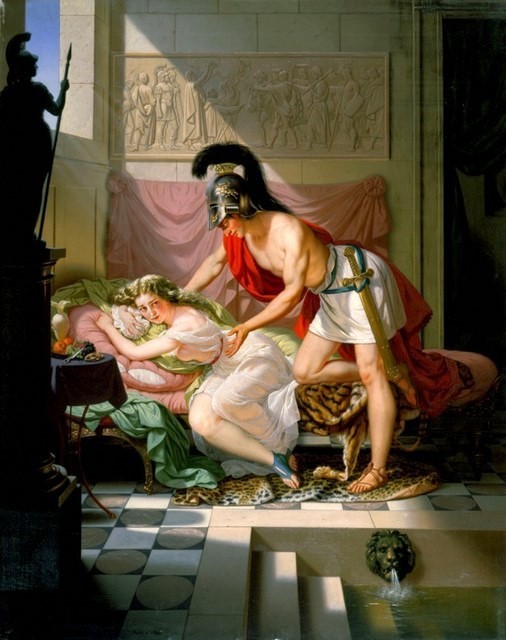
Charles Christian Nahl 1871, The Rape Of The Sabines - The Captivity